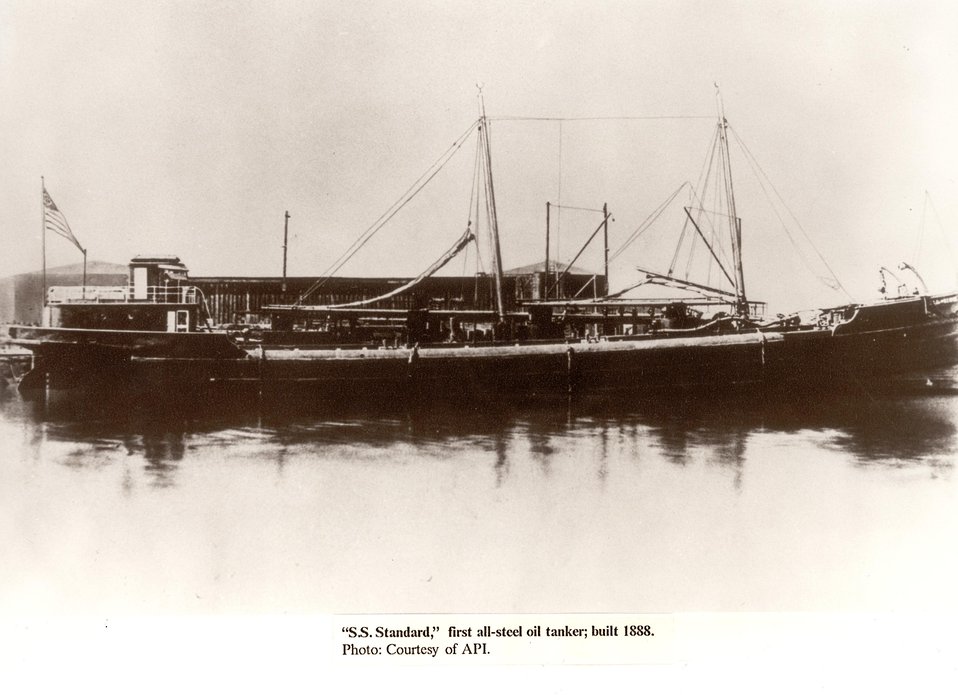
S.S. Standard, the first all-steel oil tanker, built 1888.